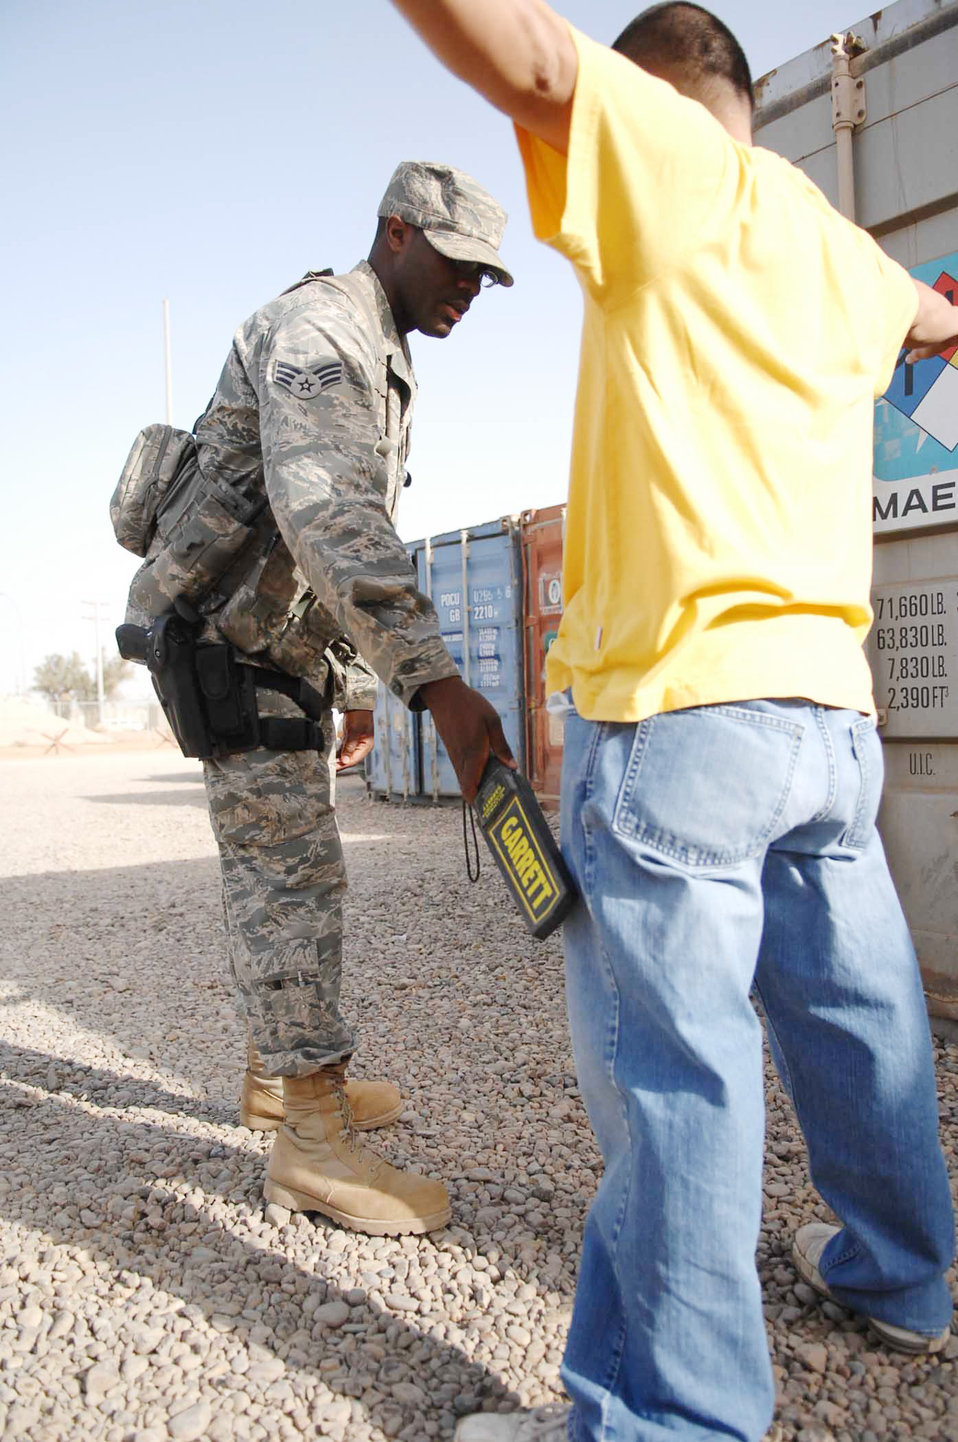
Airmen decrease base threats with random antiterrorism measures

Senior Airman Rodney Creekmore conducts a random transfrisk on a third-country national Nov. 6, 2009, at Joint Base Balad, Iraq. Airman Creekmore is a 332nd Expeditionary Security Forces Squadron patrolman. Transfrisking is one of the mitigation techniques used by 332nd SFS Airmen when conducting random antiterrorism measures.